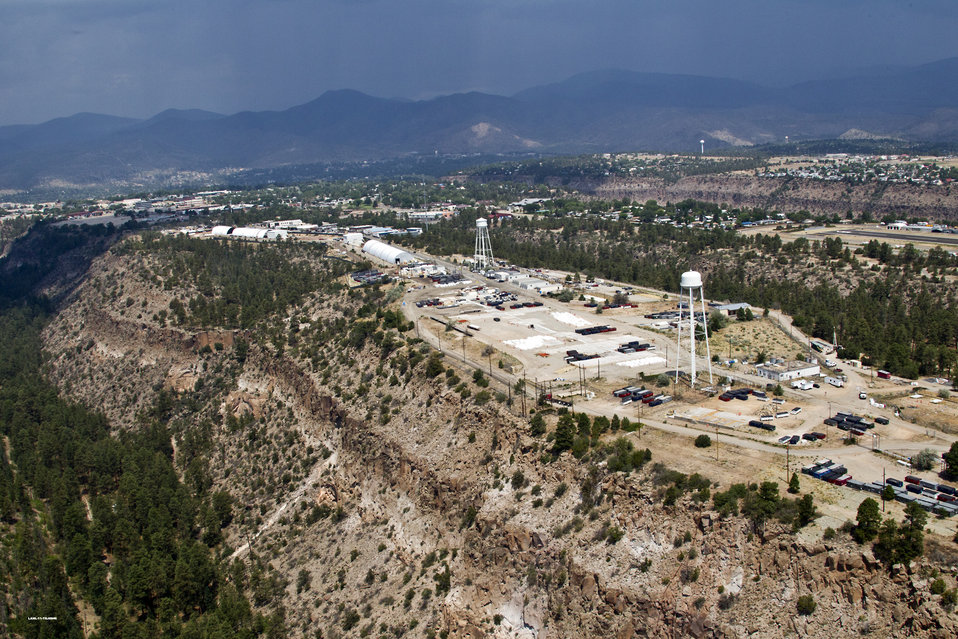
Los Alamos Technical Area 21

An aerial view shows Technical Area 21 (TA-21) at Los Alamos National Laboratory. The Recovery Act invested in the decontamination and demolition of 24 Manhattan Project and Cold War buildings at TA-21. Enclosures for the Recovery Act-funded excavation of one of the nation’s oldest waste disposal sites, Material Disposal Area B, can be seen in the upper left corner of the photo.